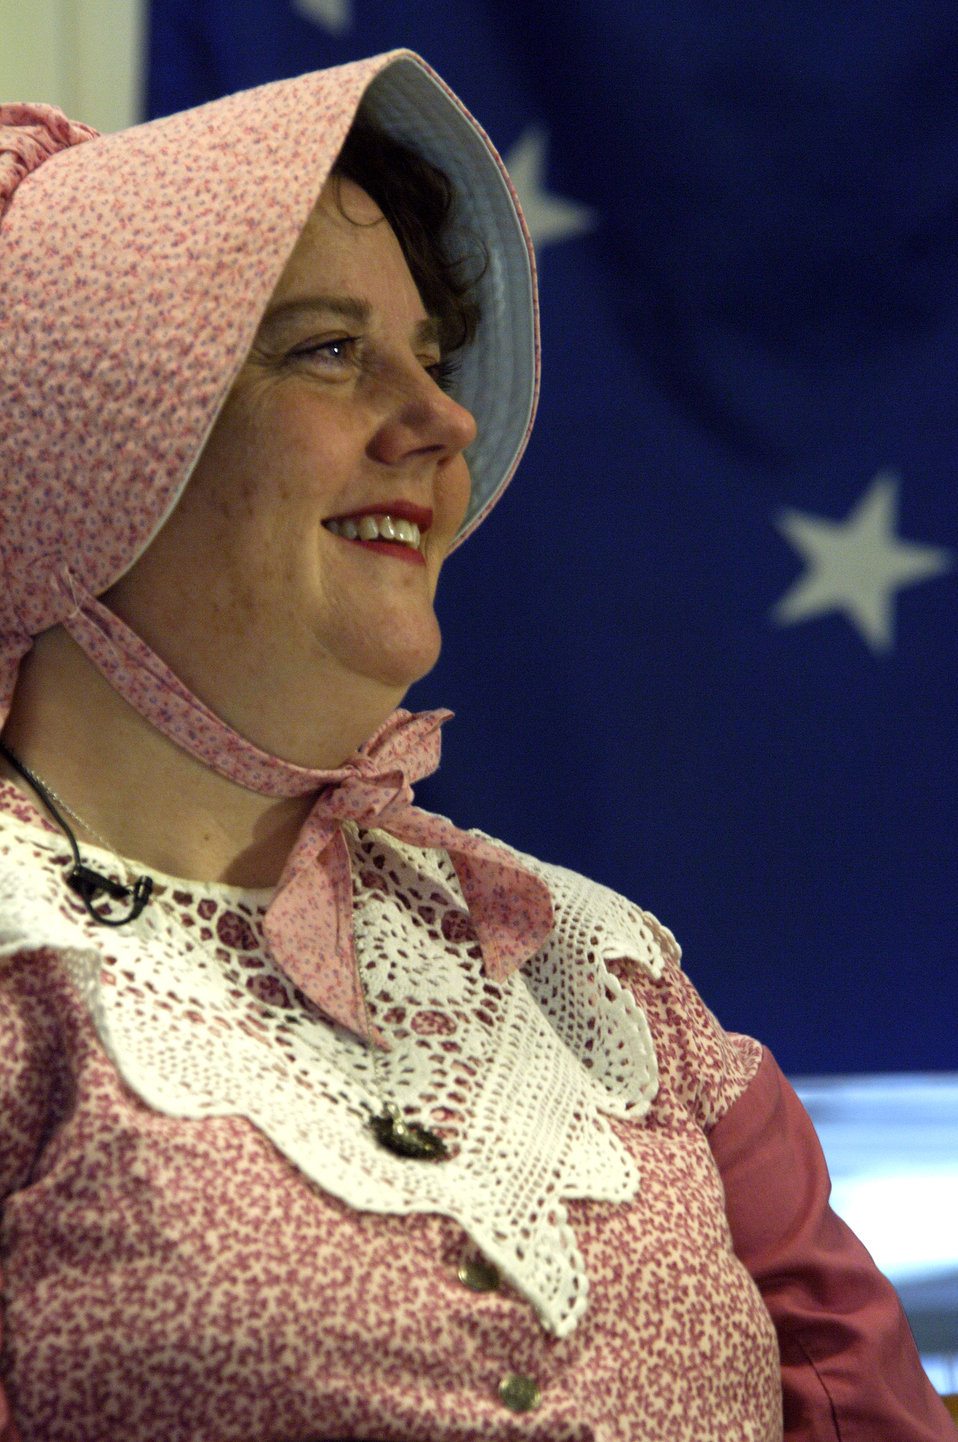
Curator an example of base's close community tie

Paula Taylor, Warren ICBM/Heritage Museum director, poses in a traditional pioneer outfit. Mrs. Taylor has been director of the museum at F.E. Warren Air Force Base, Wyo., for 15 years.